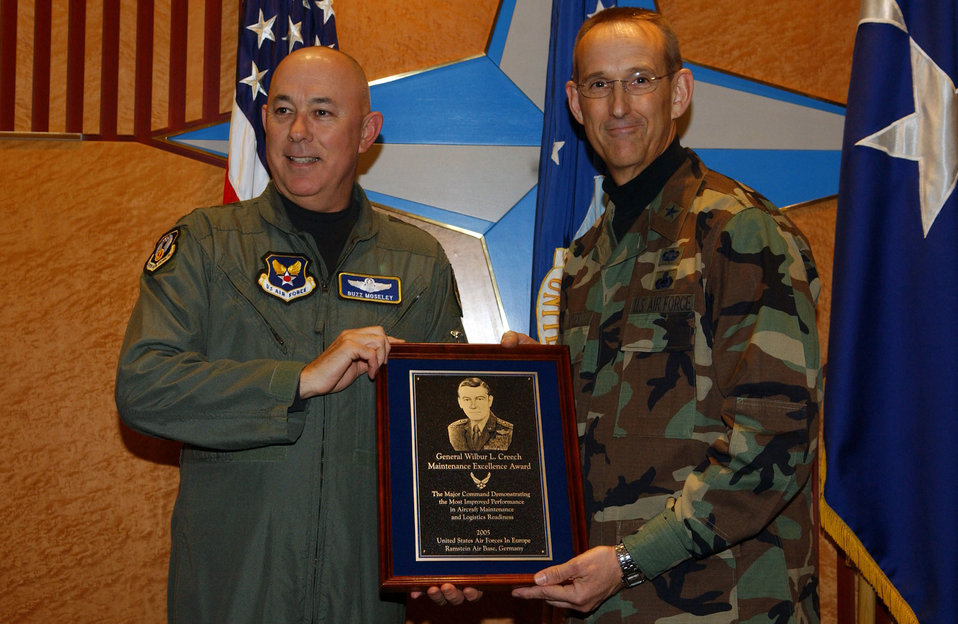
USAFE receives maintenance excellence award

Air Force Chief of Staff Gen. T. Michael Moseley (left) presents the Gen. Wilbur L. Creech Maintenance Excellence Award to Brig. Gen. Duane Jones at Ramstein Air Base, Germany, on Oct. 4. General Jones is the USAFE headquarters director of logistics.